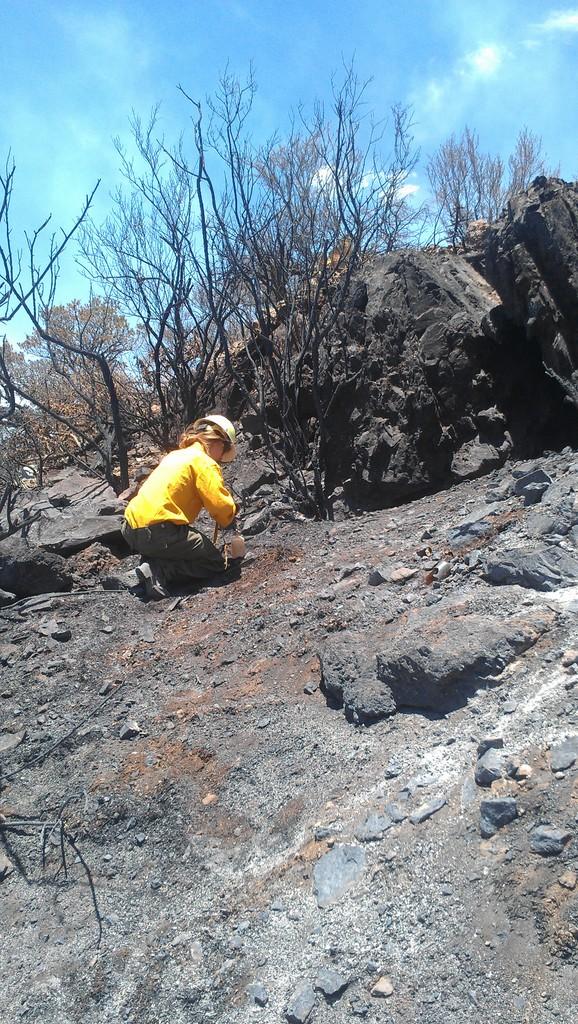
A soil scientist with the Burned Area Emergency Response (BAER) team tests for water penetration on at a high severity burn area. The Silver Post Fire response has the Burned Area Emergency Response (BAER) team beginning operations to seed acres of high burn severity and to mulch additional acres. Seeding reduces effects to downstream life, property, and infrastructure by reducing erosion and runoff. Areas of high burn severity are to be seeded with a quick germinating, non-persistent annual cereal barley that would provide rapid ground cover. A small percentage of native perennial species would also be included to give the burned area a jump start in natural recovery, and provide for long-term ground cover. Mulch is the most effective treatment for controlling erosion and runoff, as it provides immediate ground cover. Mulch also assists in stabilizing soil in and around these areas.